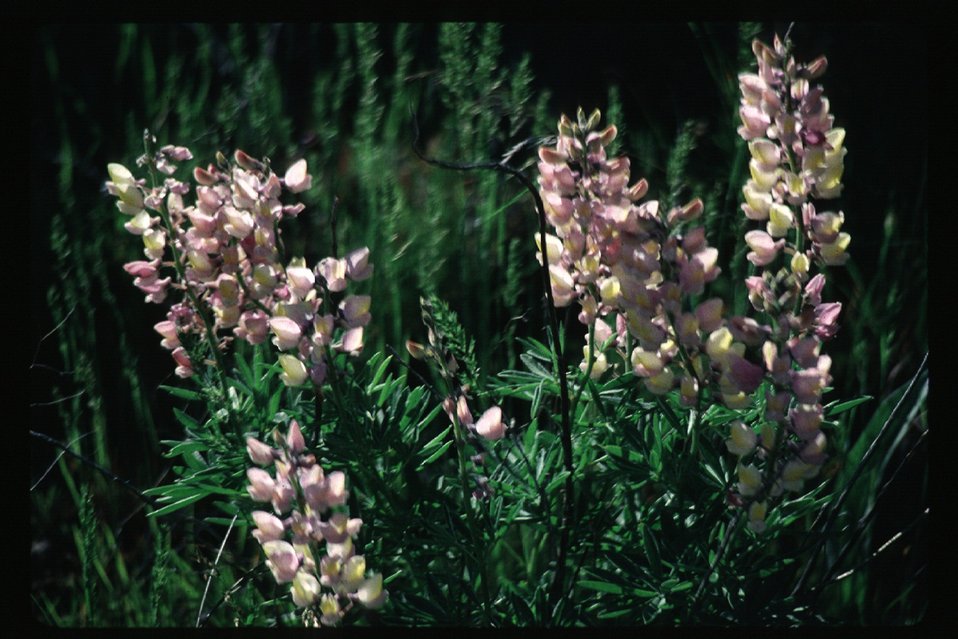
Wildflowers Scenic LSRD Lower Snake River District